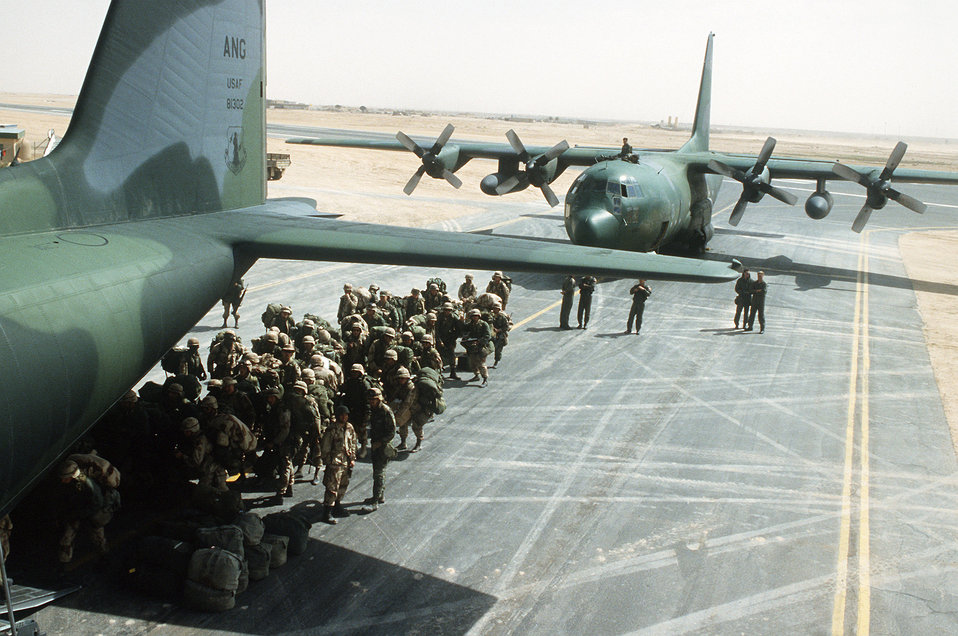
Troops of the U.S. Army's XVIII Airborne Corps wait to board a C-130 Hercules

1990's -- Troops of the U.S. Army's XVIII Airborne Corps wait to board a C-130 Hercules transport aircraft of the 1630th Tactical Airlift Wing for a transit to Fort Bragg, N.C., following the liberation of Kuwait during Operation Desert Storm. Behind the troops is another C-130 Hercules aircraft.